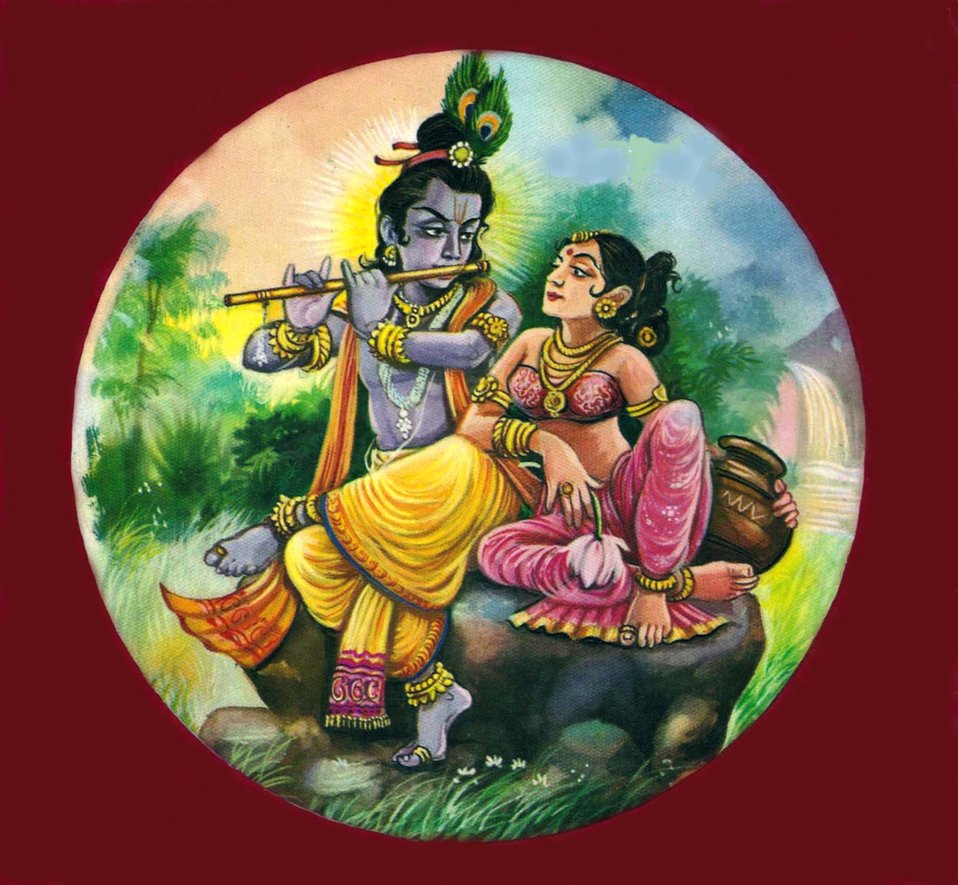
I made this image by myself.